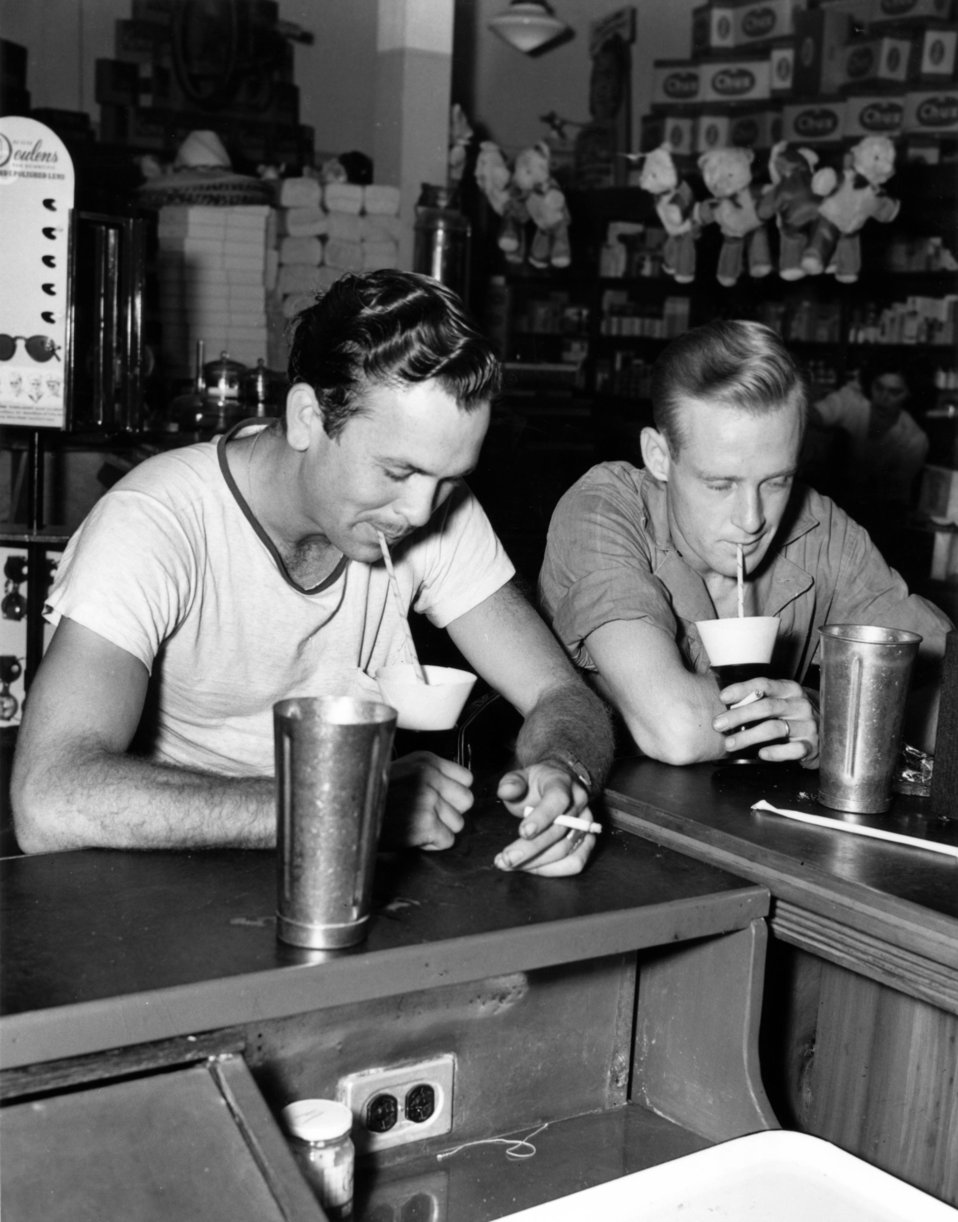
Daily Life at Oak Ridge